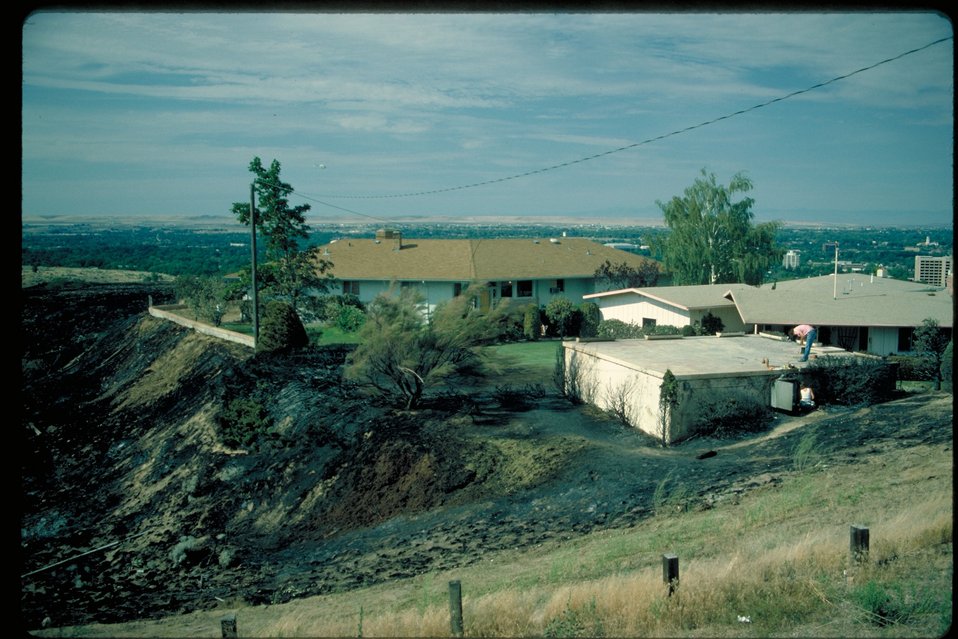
Fire near house Boise Front Four Rivers Field Office LSRD Lower Snake River District